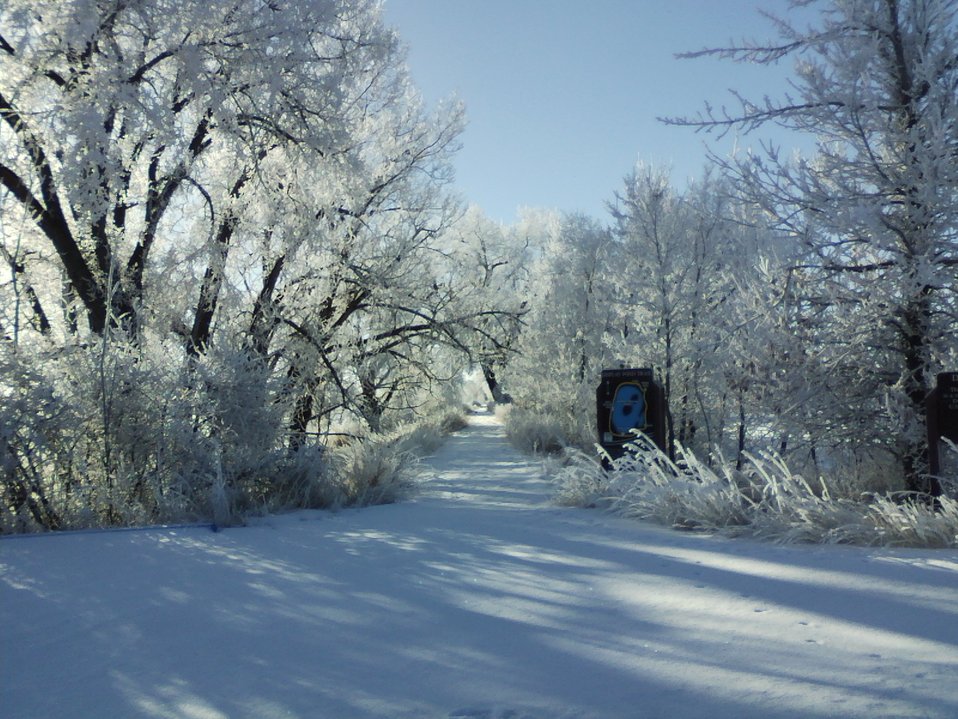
Walking Trail on Bowdoin NWR

A 0.4 mile walking trail on the Bowdoin National Wildlife Refuge.